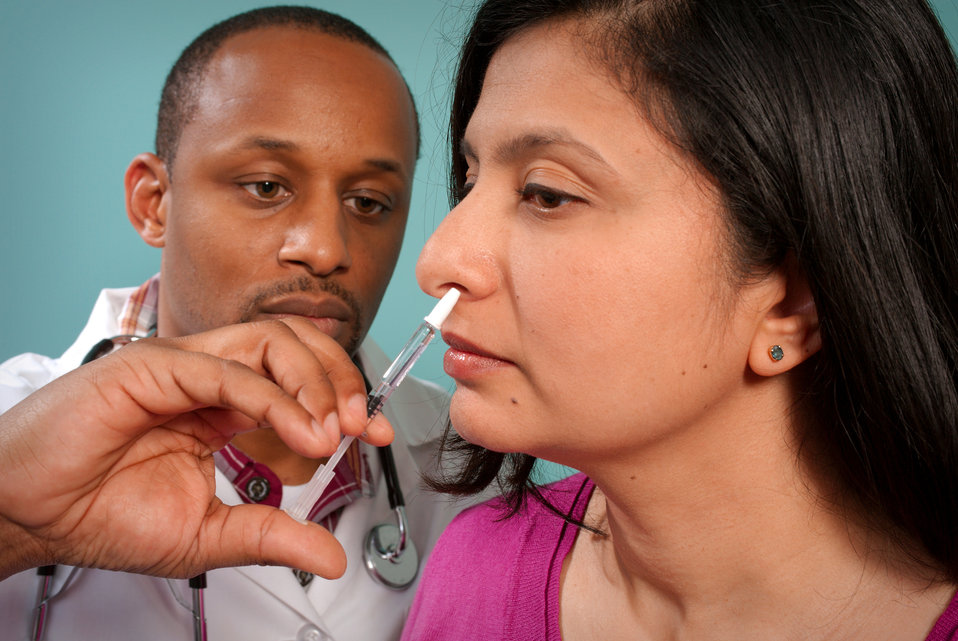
This 2009 image depicts a healthcare practitioner as he was administering the H1N1 live attenuated intranasal vaccine (LAIV) to a female recipient. Using a small syringe, he was delivering the vaccine mist into the woman's left nostril.